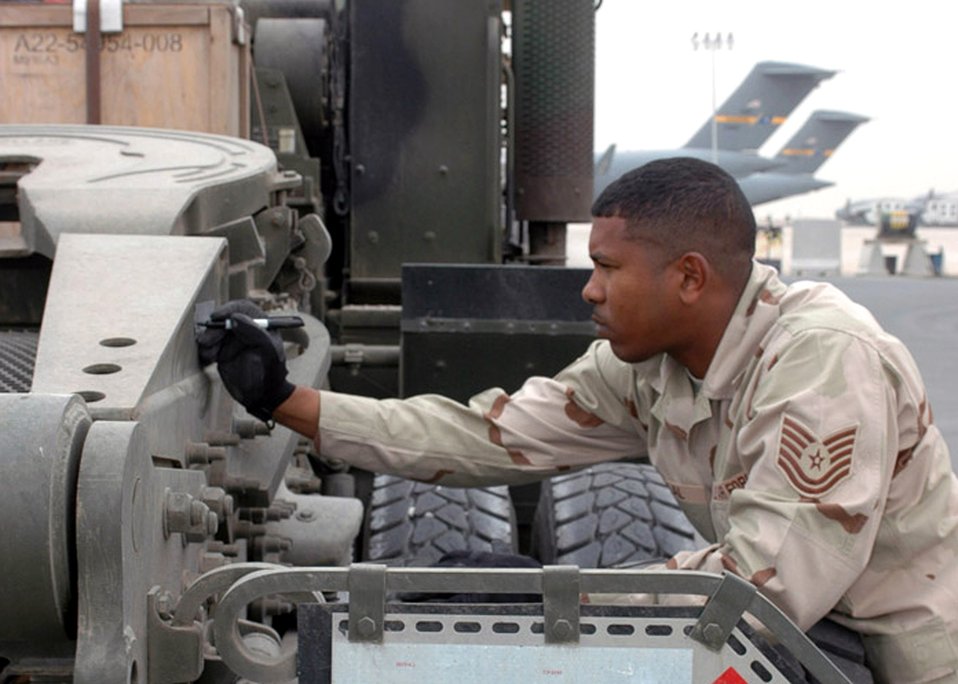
CENTAF Airpower Summary for April 5, 2007

Tech. Sgt. Garth Chablal prepares a large truck for shipment to Afghanistan on a C-17 Globemaster III based out of the 379th Air Expeditionary Wing. Airmen in 379th AEW have increased their activities to support surge operations in Iraq and Afghanistan. Sergeant Chablal is an air freight supervisor with the 8th Expeditionary Air Mobility Squadron.